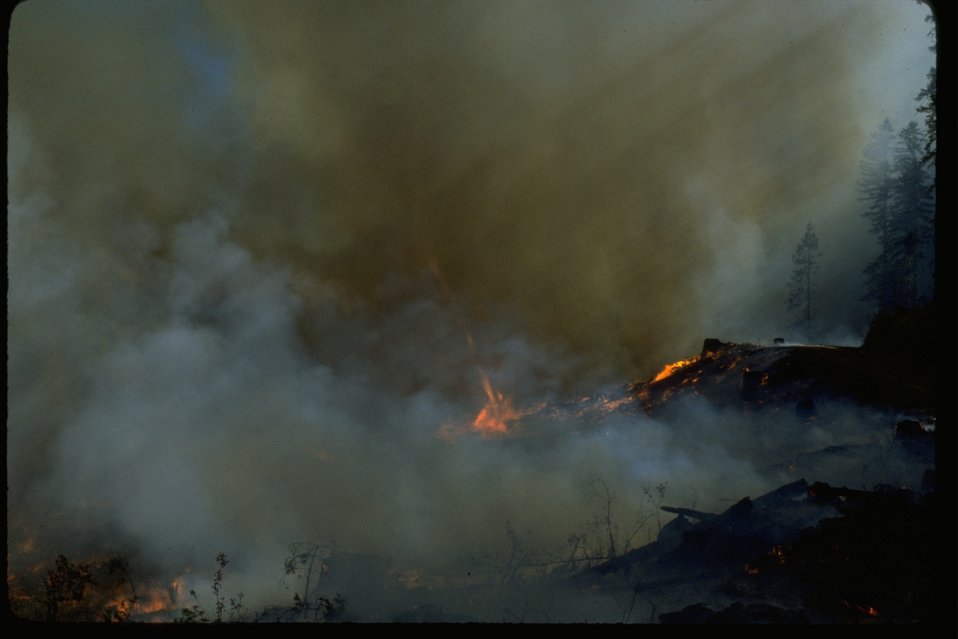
Forest Fire.